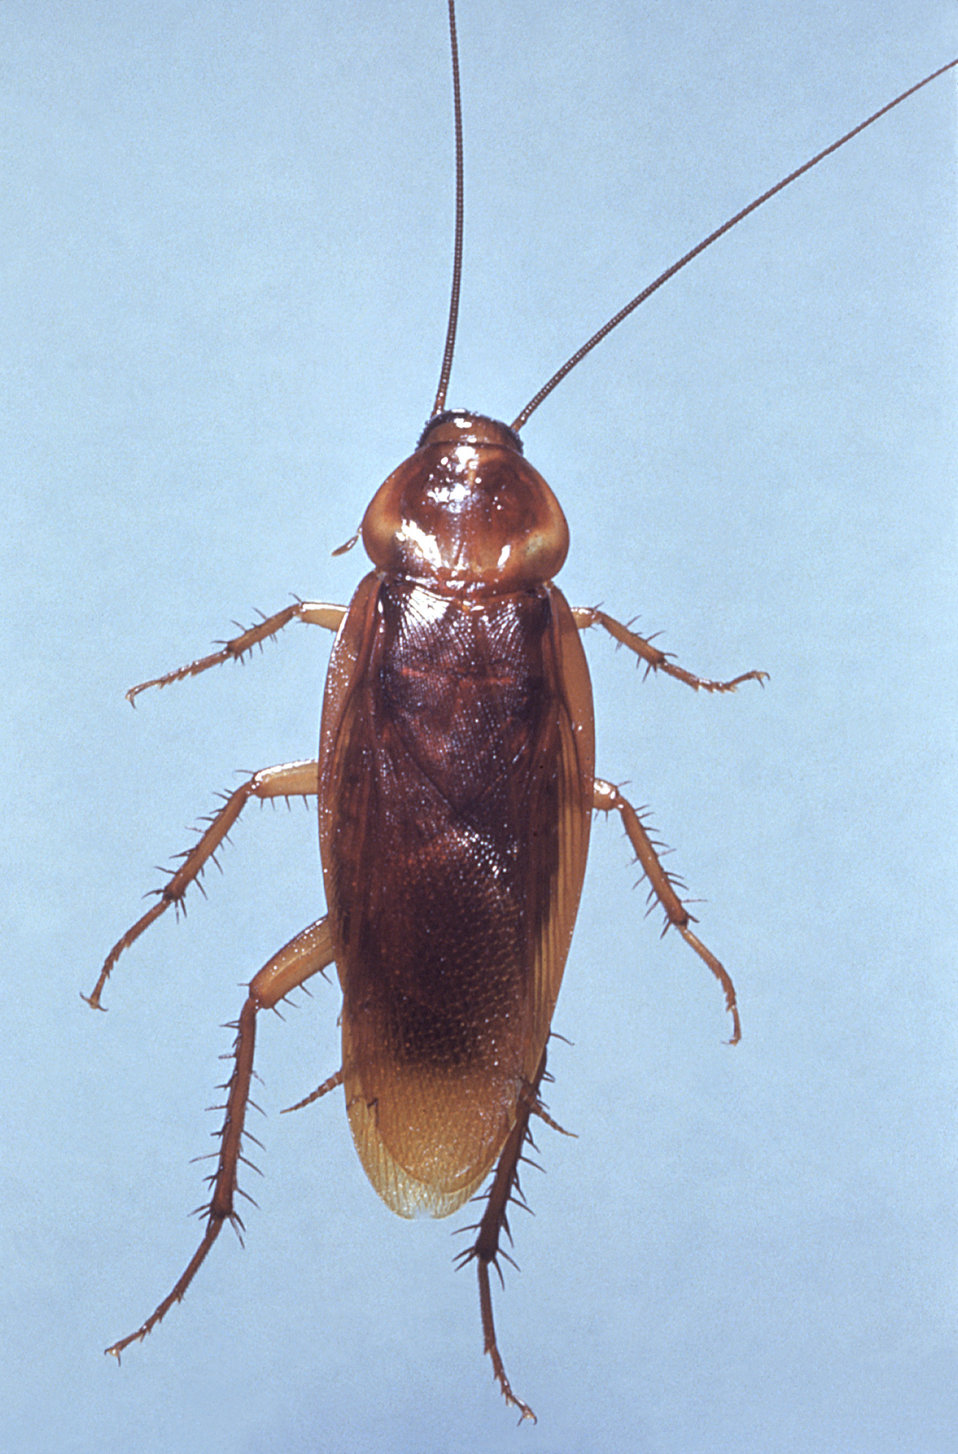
This is a dorsal view of an American cockroach, Periplaneta americana, a vector for a number of pathogenic organisms.